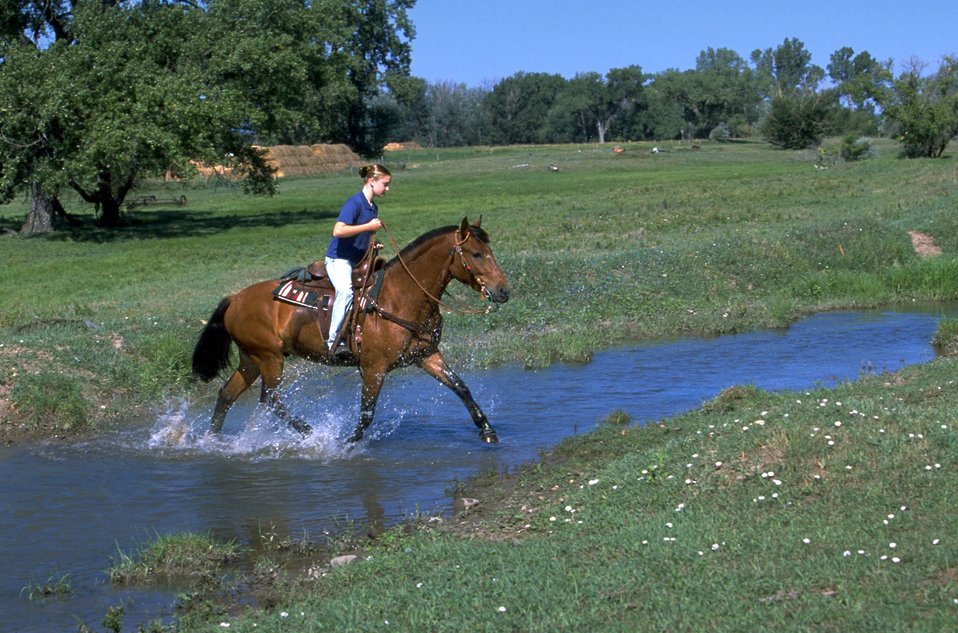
Adopted dun Horse crossing Creek